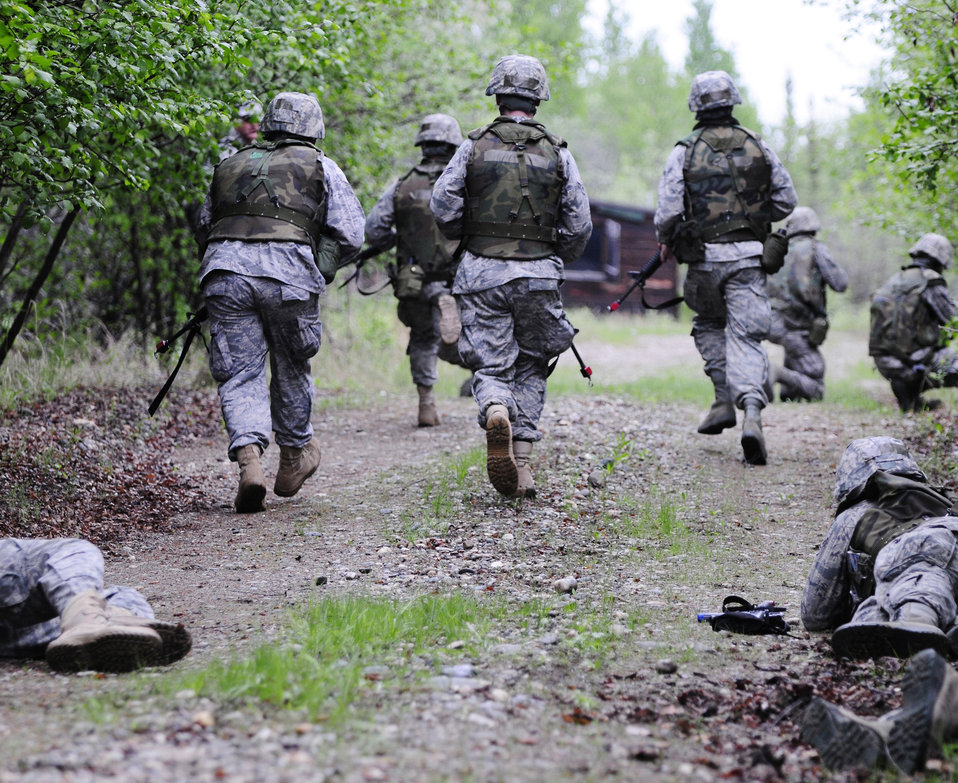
Dismounted patrol preparedness exercise

Airmen